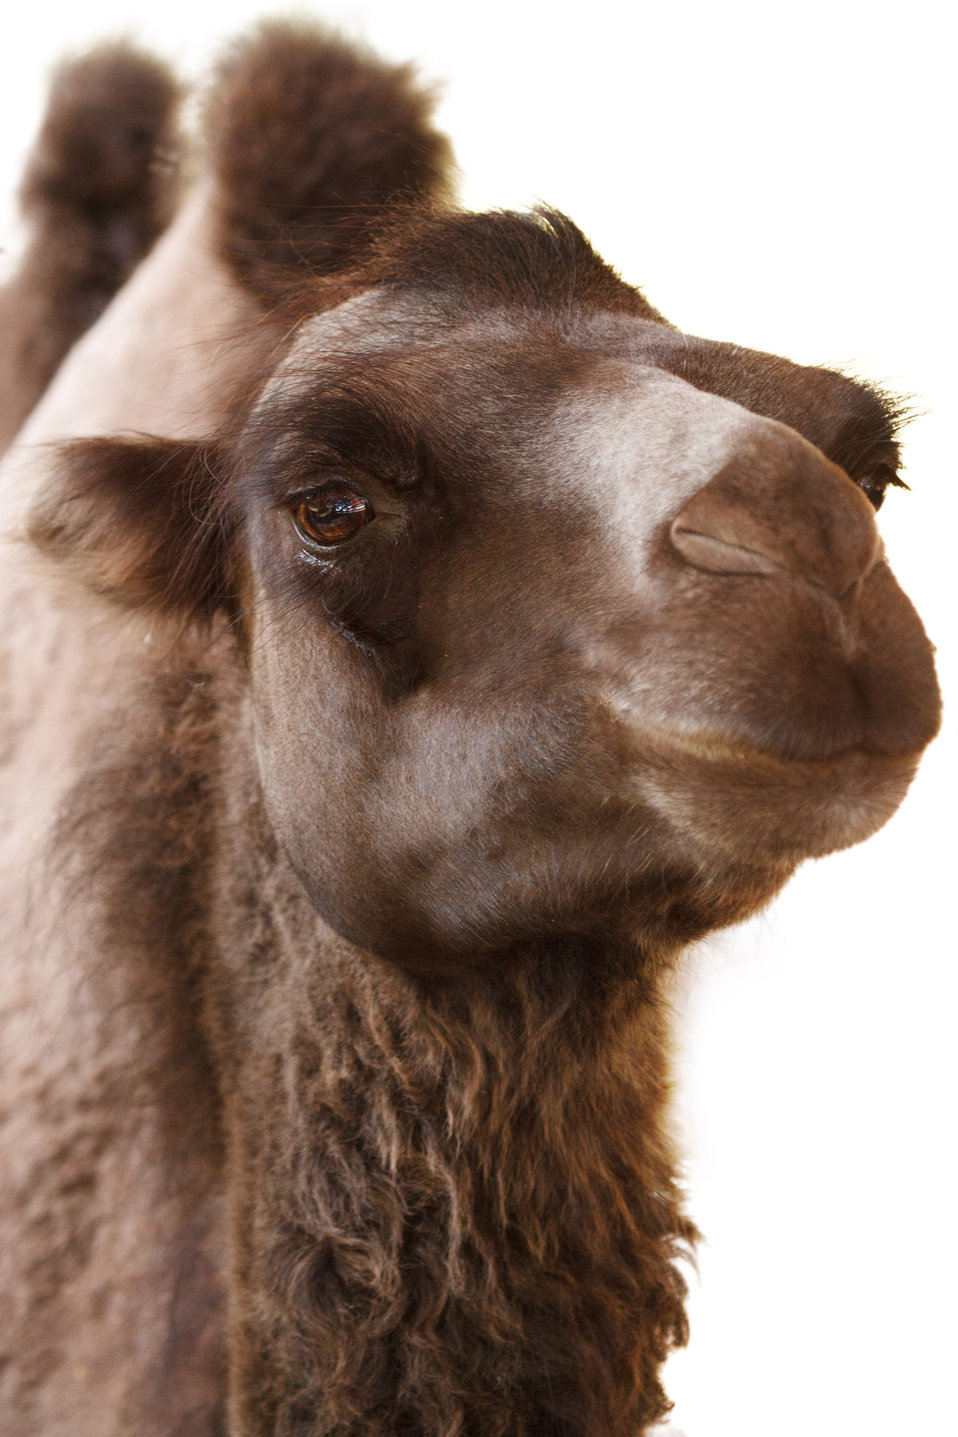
Camel

A camel isolated on white background.